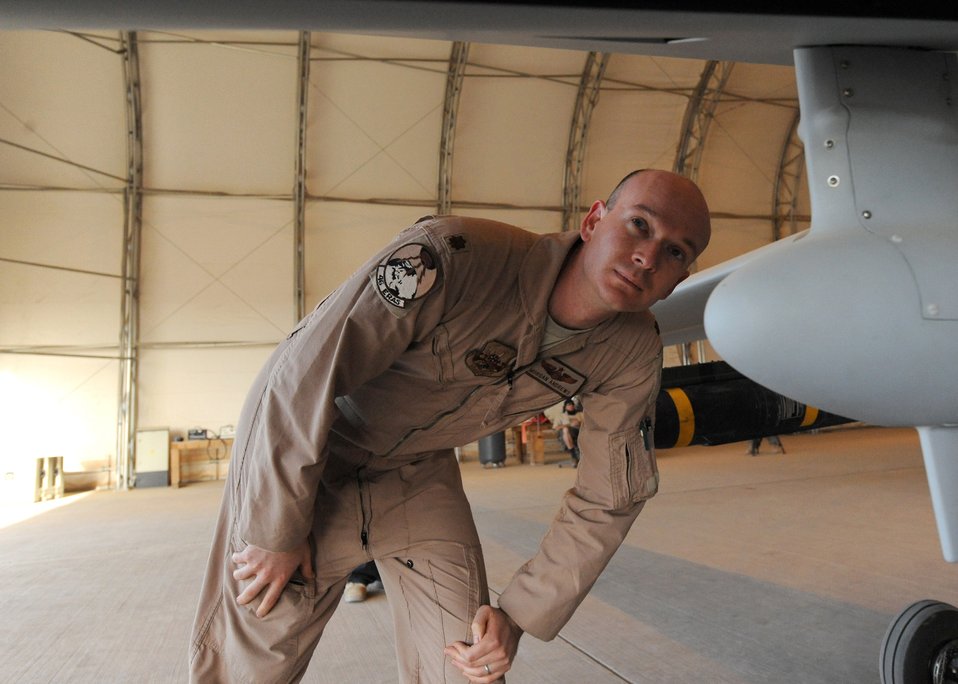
Predator takes flight

Maj. Morgan Andrews, the 46th Reconnaissance and Attack Squadron director of operations at Joint Base Balad, Iraq, inspects an unmanned MQ-1 Predator before its first flight from the base Feb. 13. The Predator system is made up of the ground-control system, a satellite link, personnel and the aircraft. Major Andrews is deployed from Creech Air Force Base, Nev.